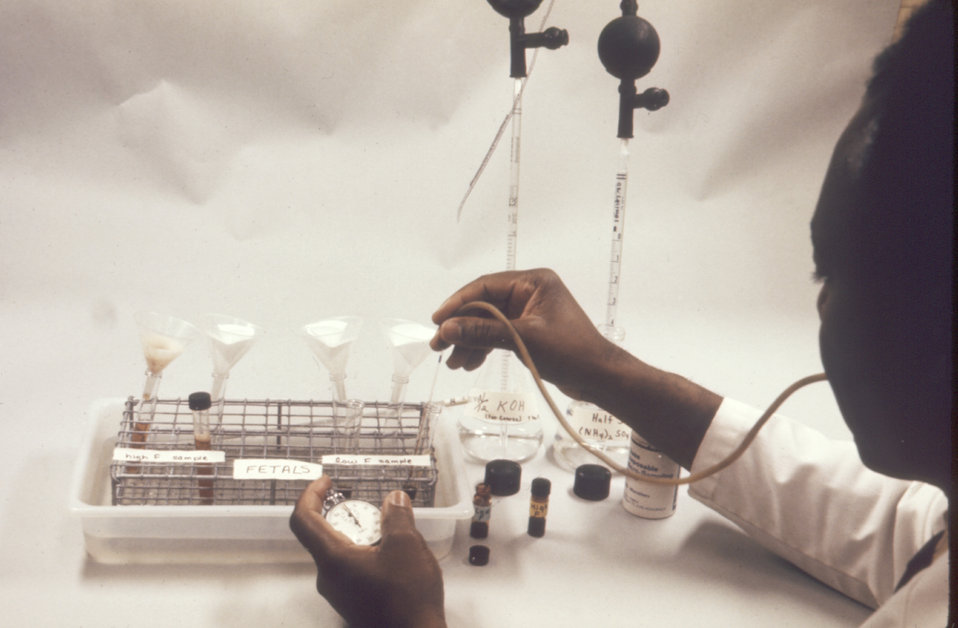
This laboratorian is conducting a fetal hemoglobin test.